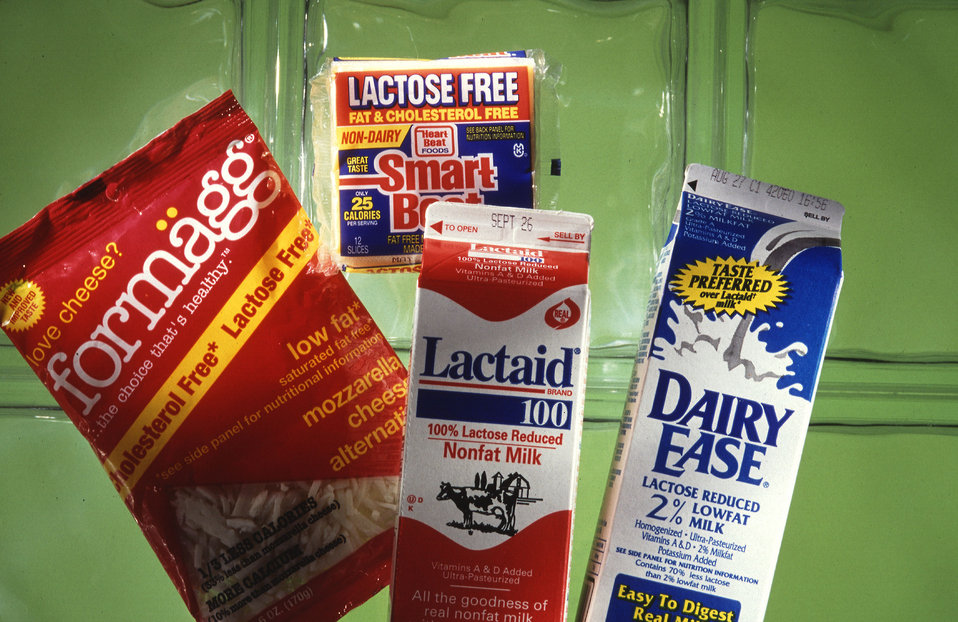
Many American adults have trouble digesting lactose (milk sugar). The U.S. Department of Agriculture’s (USDA) Agricultural Research Service (ARS) scientists have developed lactose-free products by altering a bacterium used to make cheese and yogurt. It produces an enzyme that in turn breaks down the milk's lactose, sparing you and upset stomach.